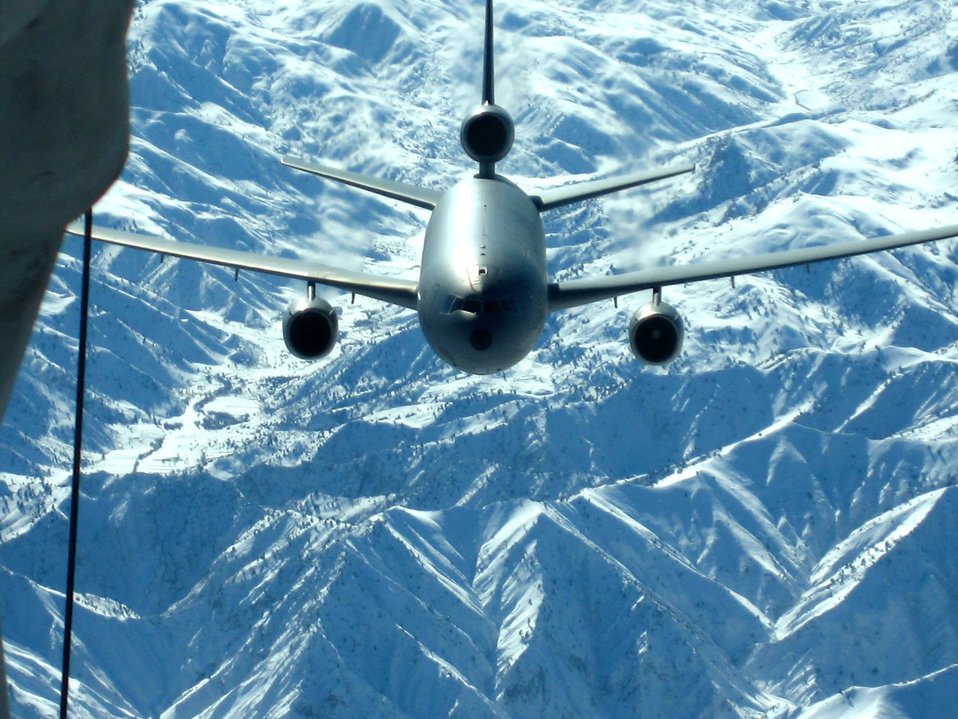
Gas and go

A KC-10 Extender from the 380th Air Expeditionary Wing in Southwest Asia pulls up behind another KC-10 from the wing Dec. 14 over Afghanistan. Both refuelers were supporting Operation Enduring Freedom missions being flown by U.S. and coalition aircraft. The 380th AEW is home to the largest air refueling wing in Southwest Asia, flying KC-10s and KC-135 Stratotankers in support of wartime operations.